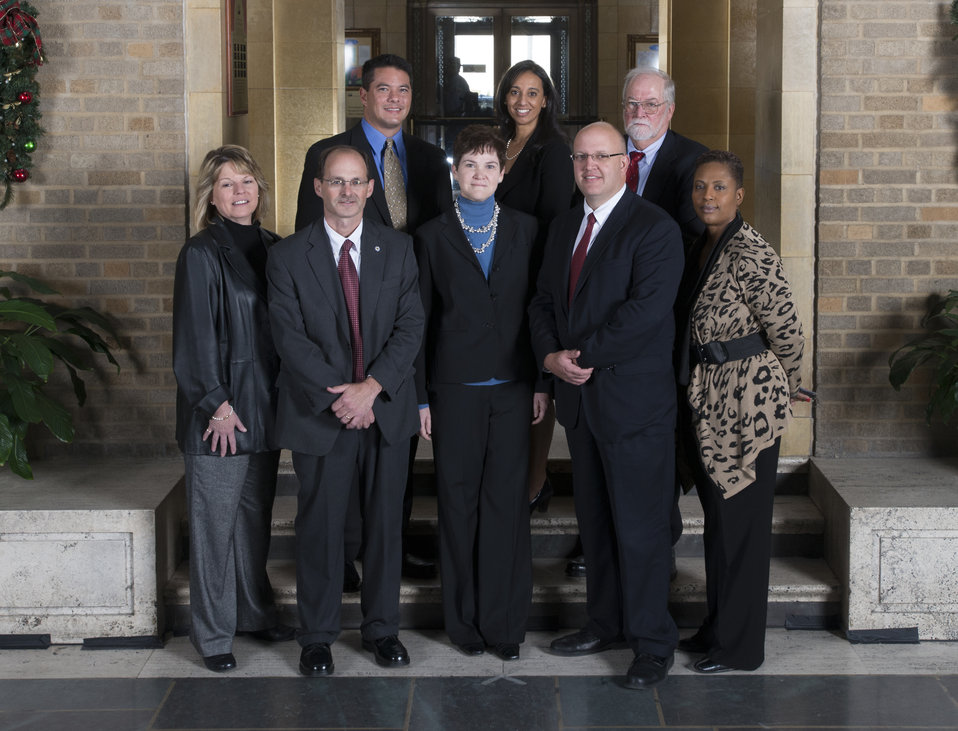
Agriculture Deputy Secretary Krysta Harden stands with the North Carolina Crop Insurance Investigative Team, Office of Inspector General from Raleigh, NC on the patio at the U.S. Department of Agriculture (USDA) in Washington, D.C. on Wednesday, Dec. 11, 2013. The team received the Secretary’s Honor Award for their tireless dedication during a collaborative investigative effort to stop the largest crop insurance fraud scheme uncovered in the country.